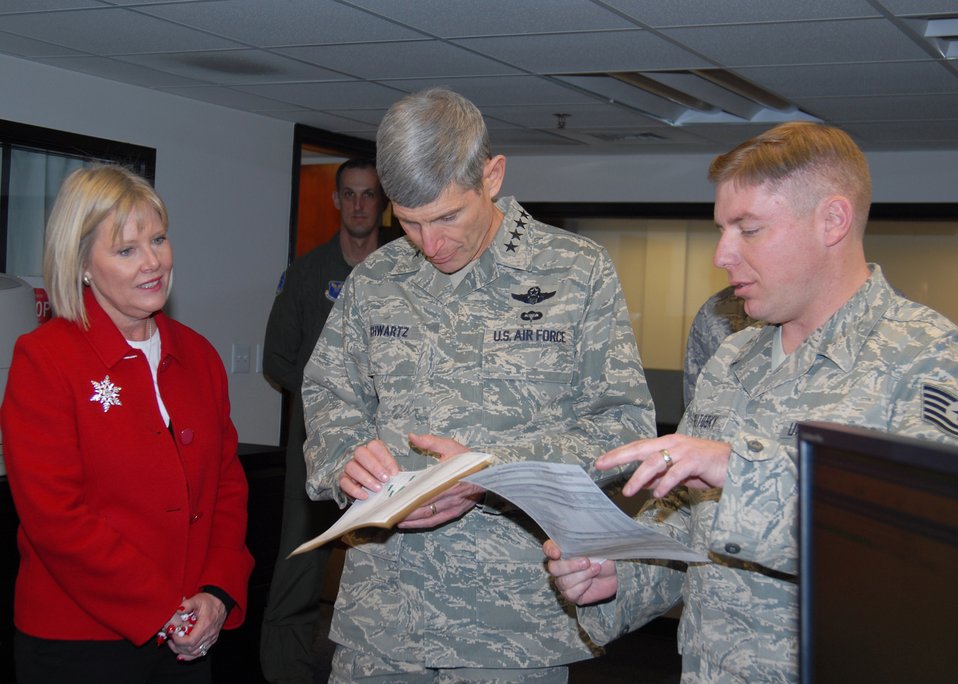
CSAF visit

Tech. Sgt. Matthew Brutosky, 90th Maintenance Group at F.E. Warren Air Force Base, Wyo., briefs Air Force Chief of Staff Gen. Norton Schwartz and Mrs. Schwartz Dec. 24, 2009, on how information is tracked in the Transportation Control Center. The general and Mrs. Schwartz visited the base during Christmas to thank Airmen in 24-hour work centers and to reinforce the Air Force's commitment to the nuclear enterprise.